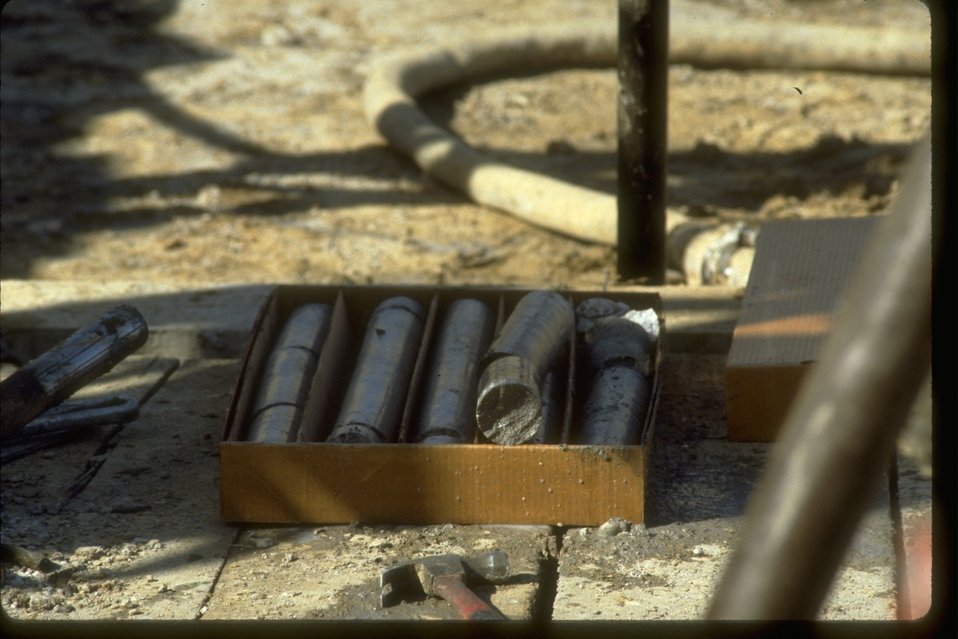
Core samples from Asamera Minerals gold exploration site near Wenatchee, Washington